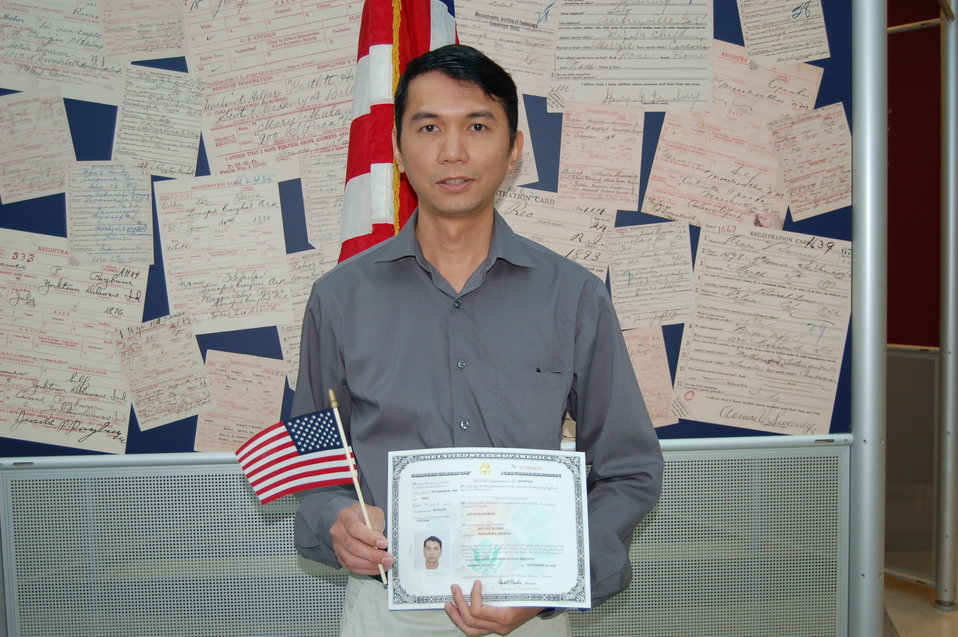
New Citizens